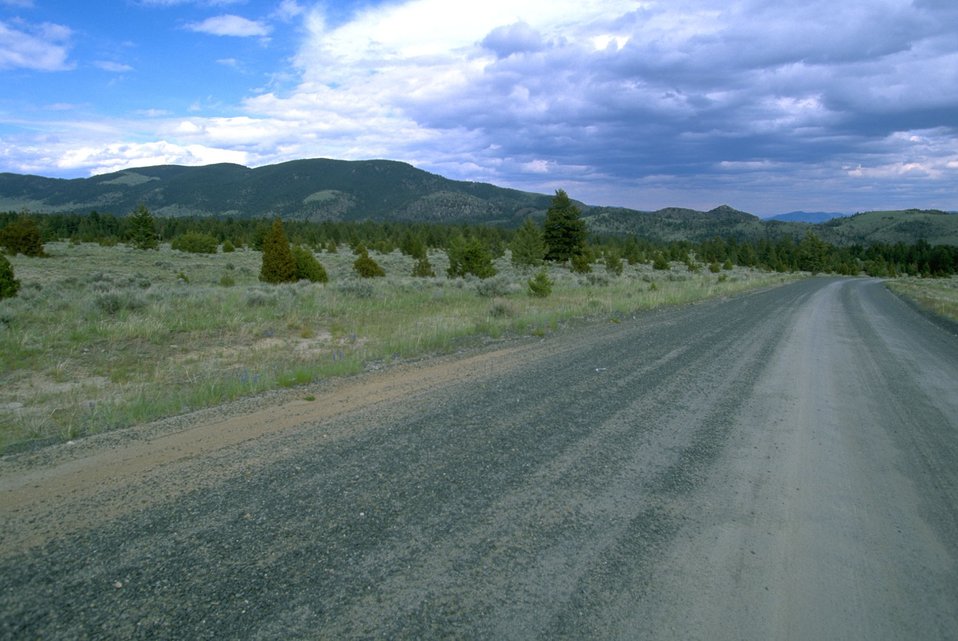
Road and sagebrush in the Pipestone Hills